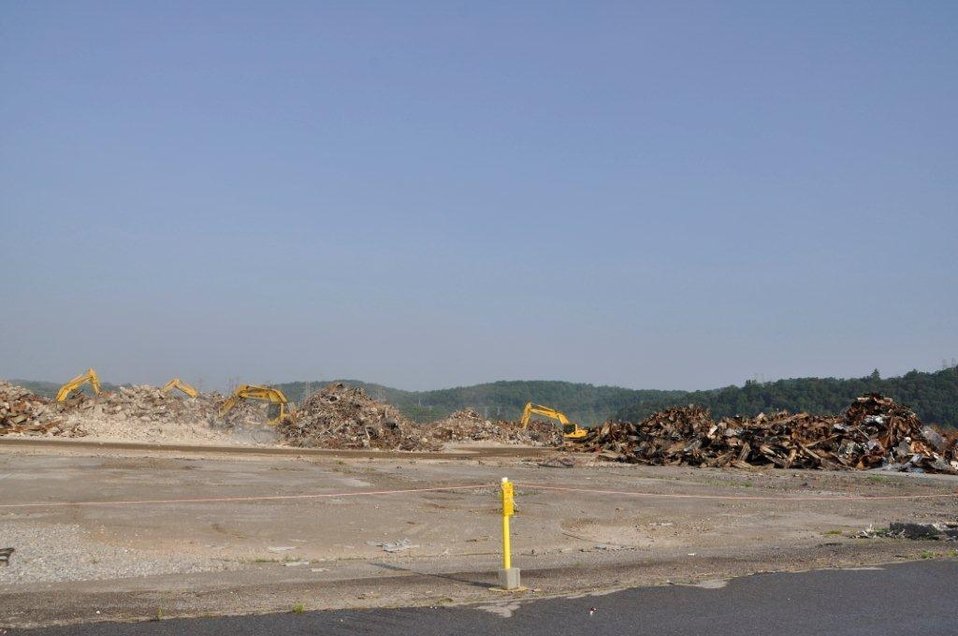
K-33 cleanup at Oak Ridge

Once debris is removed, workers at K-33 will begin removing the building’s slab and any contaminated soils.